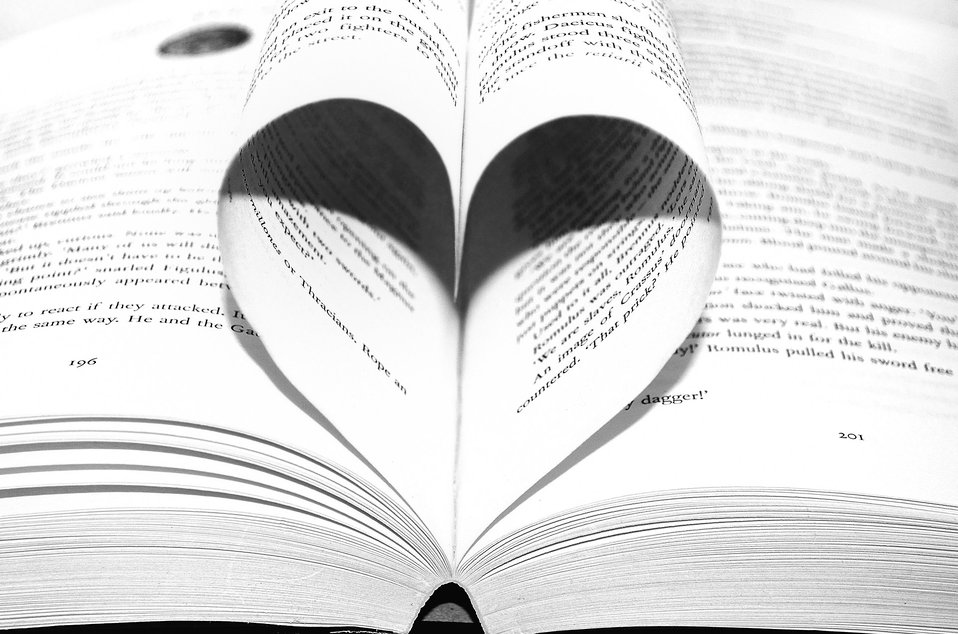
Love of books.